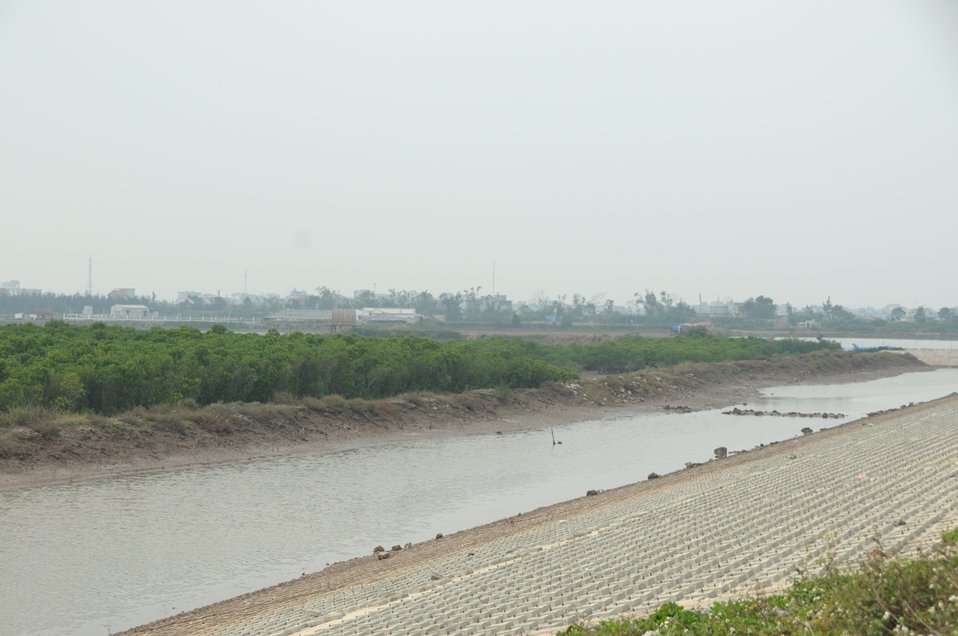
Mangrove forests in Nam Dinh Province.

Quat Lam, Nam Dinh. January 16, 2014.